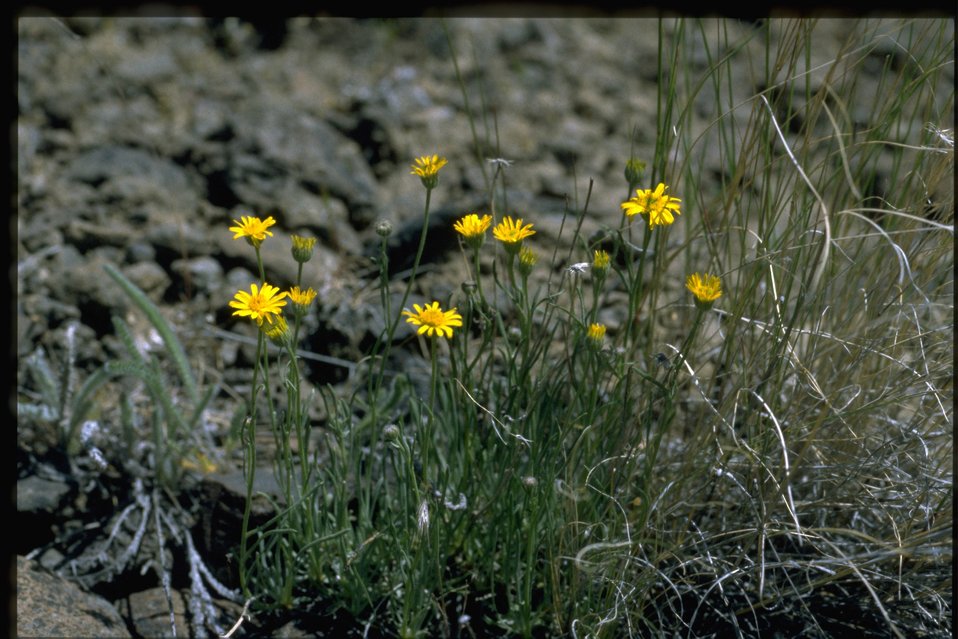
Farshot of desert yellow fleabane (Erigeron linearis)